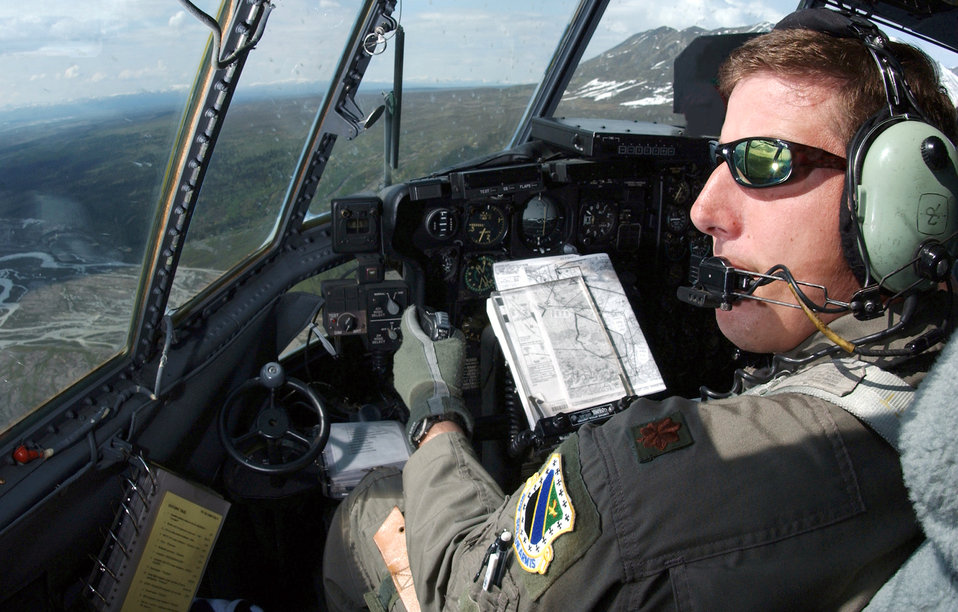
Looking out for trouble

ELMENDORF AIR FORCE BASE, Alaska (AFPN) -- Maj. Bob Zid looks for